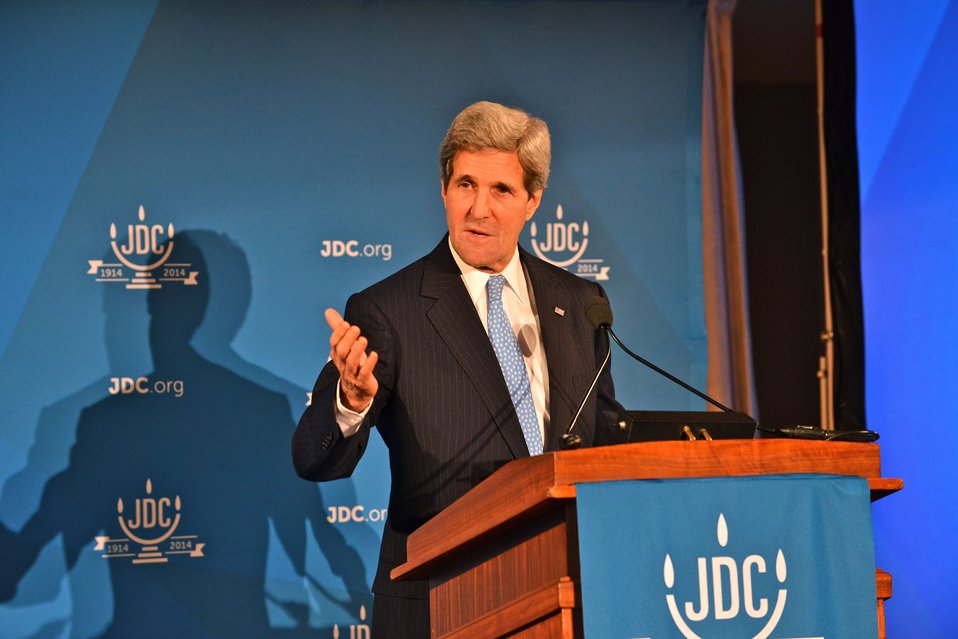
Secretary Kerry Delivers Remarks at the American Jewish Joint Distribution Committee’s 100th Anniversary Celebration

U.S. Secretary of State John Kerry delivers remarks at the American Jewish Joint Distribution Committee’s 100th Anniversary Celebration at the National Women in the Arts Museum in Washington, D.C., on December 9, 2013.